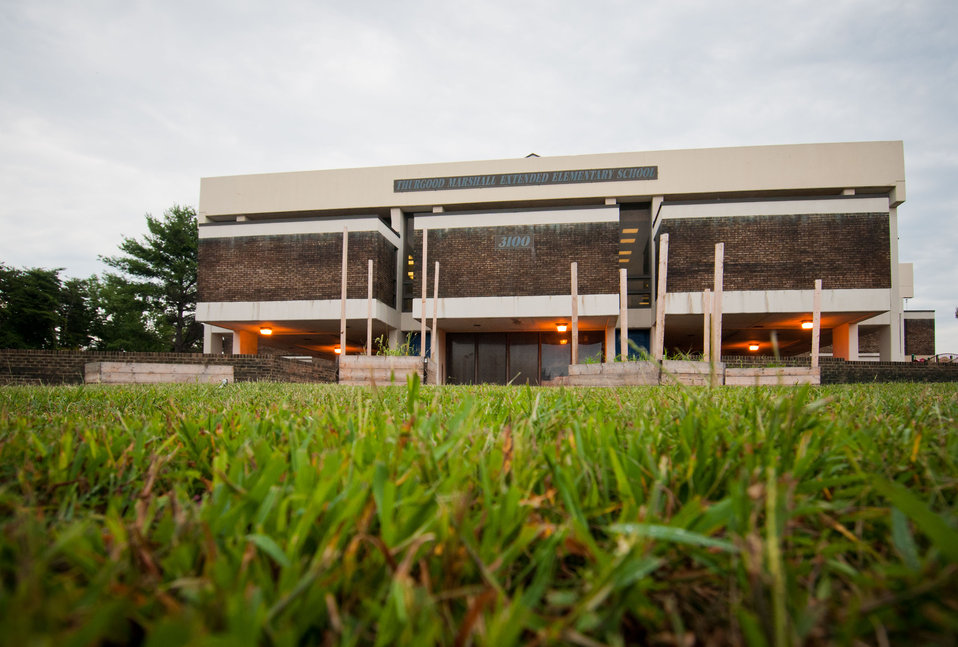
School front and existing raised garden beds, before U.S. Department of Agriculture (USDA) People’s Garden Executive Master Gardeners, friends, and family, along with Washington Capitals fans arrive to volunteer in the District of Columbia Public Schools’ (DCPS) Beautification Day, on Saturday, August 25, 2012, at Thurgood Marshall Elementary School, in Washington, D.C. Each year people are invited to help “spruce up” public school facilities in preparation for the first day of school. More than 70 volunteers pitched in at this large school facility. The People’s Garden effort involves building and painting raised planter boxes, then preparing the soil mixture so they are “ready to grow.” Additionally, a team that includes descendants of U.S. Supreme Court Justice Thurgood Marshall assembles a prefabricated garden toolshed. The Justice’s son, John Marshall leads the team, which includes Brianna the Justice’s great-grand daughter in one of many multi-generational efforts at this school today. Washington Capitals Forward Mike Riberio, his family and mascot Slapshot participated in every project underway at Marshall School. From the outside gardens, to inside murals, and robotics worktable construction, the teams made their goals.